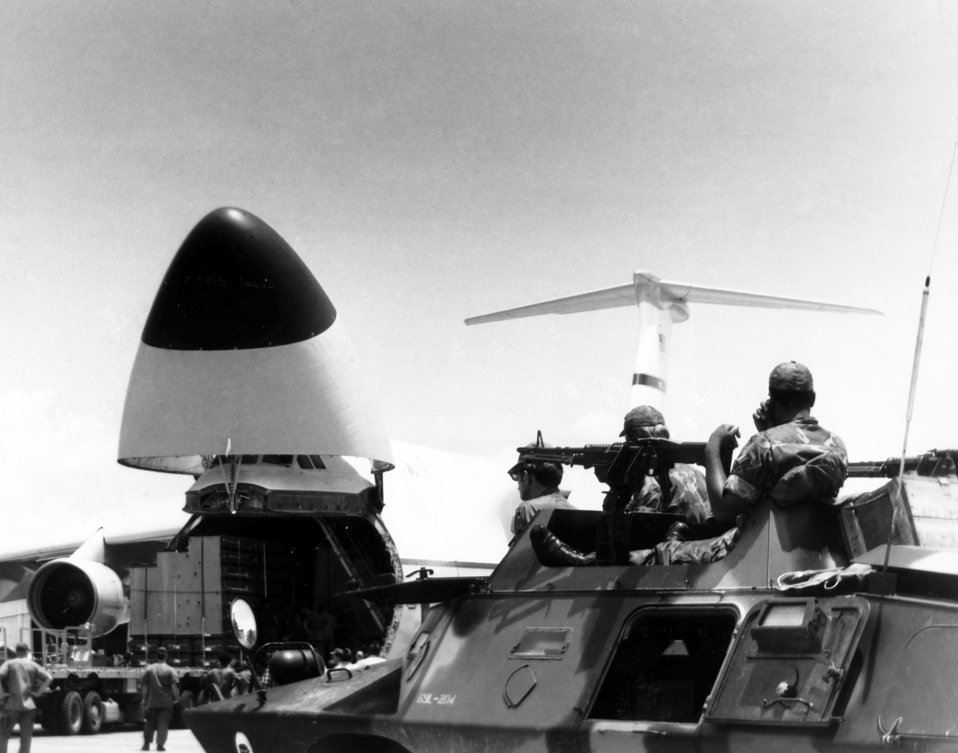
C-5 being loaded

1970's -- Tan Son Nhut Air Base, South Vietnam, December 1971 -- Members of the 377th Security Police Squadron watch a C-5 being loaded with cargo.